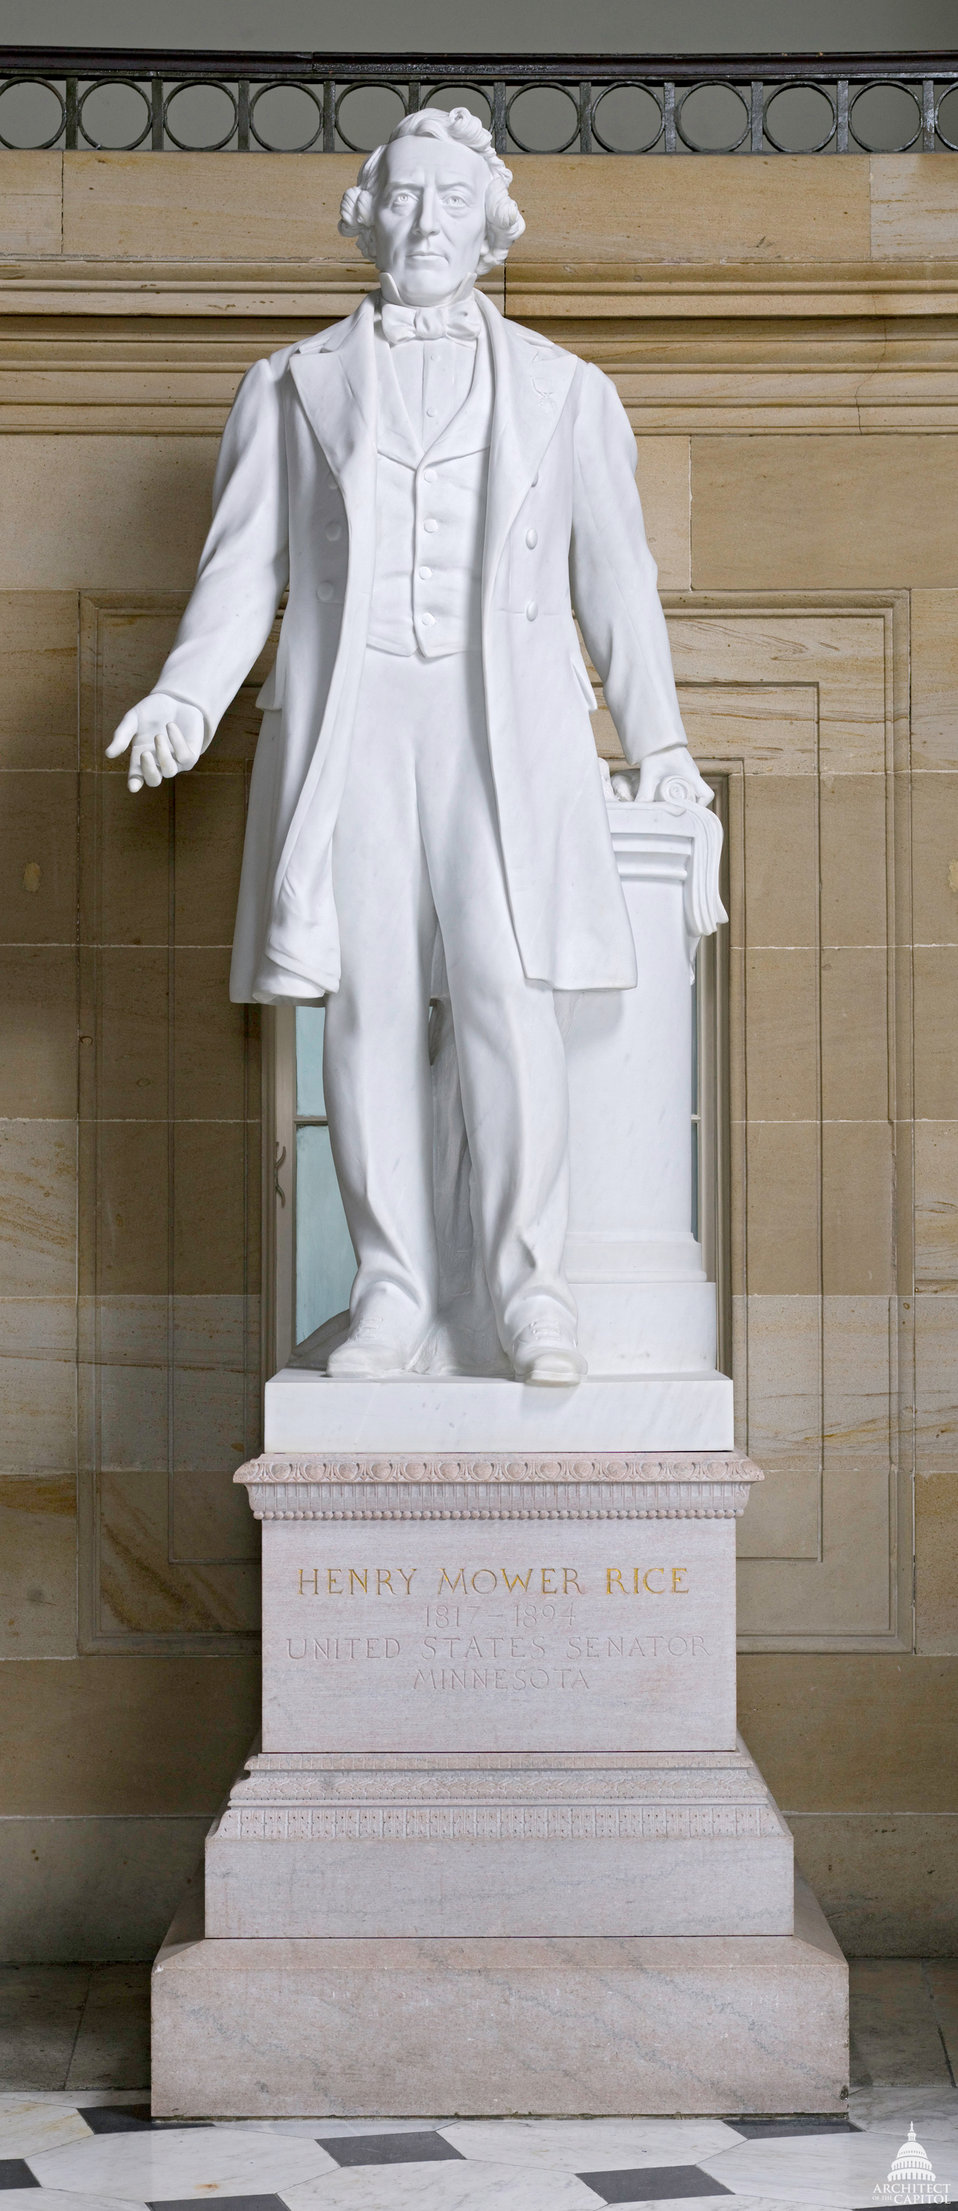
Henry Mower Rice Statue

Henry Mower Rice (1817-1894)
Minnesota
Marble by Frederick E. Triebel
Given in 1916
National Statuary Hall
U.S. Capitol